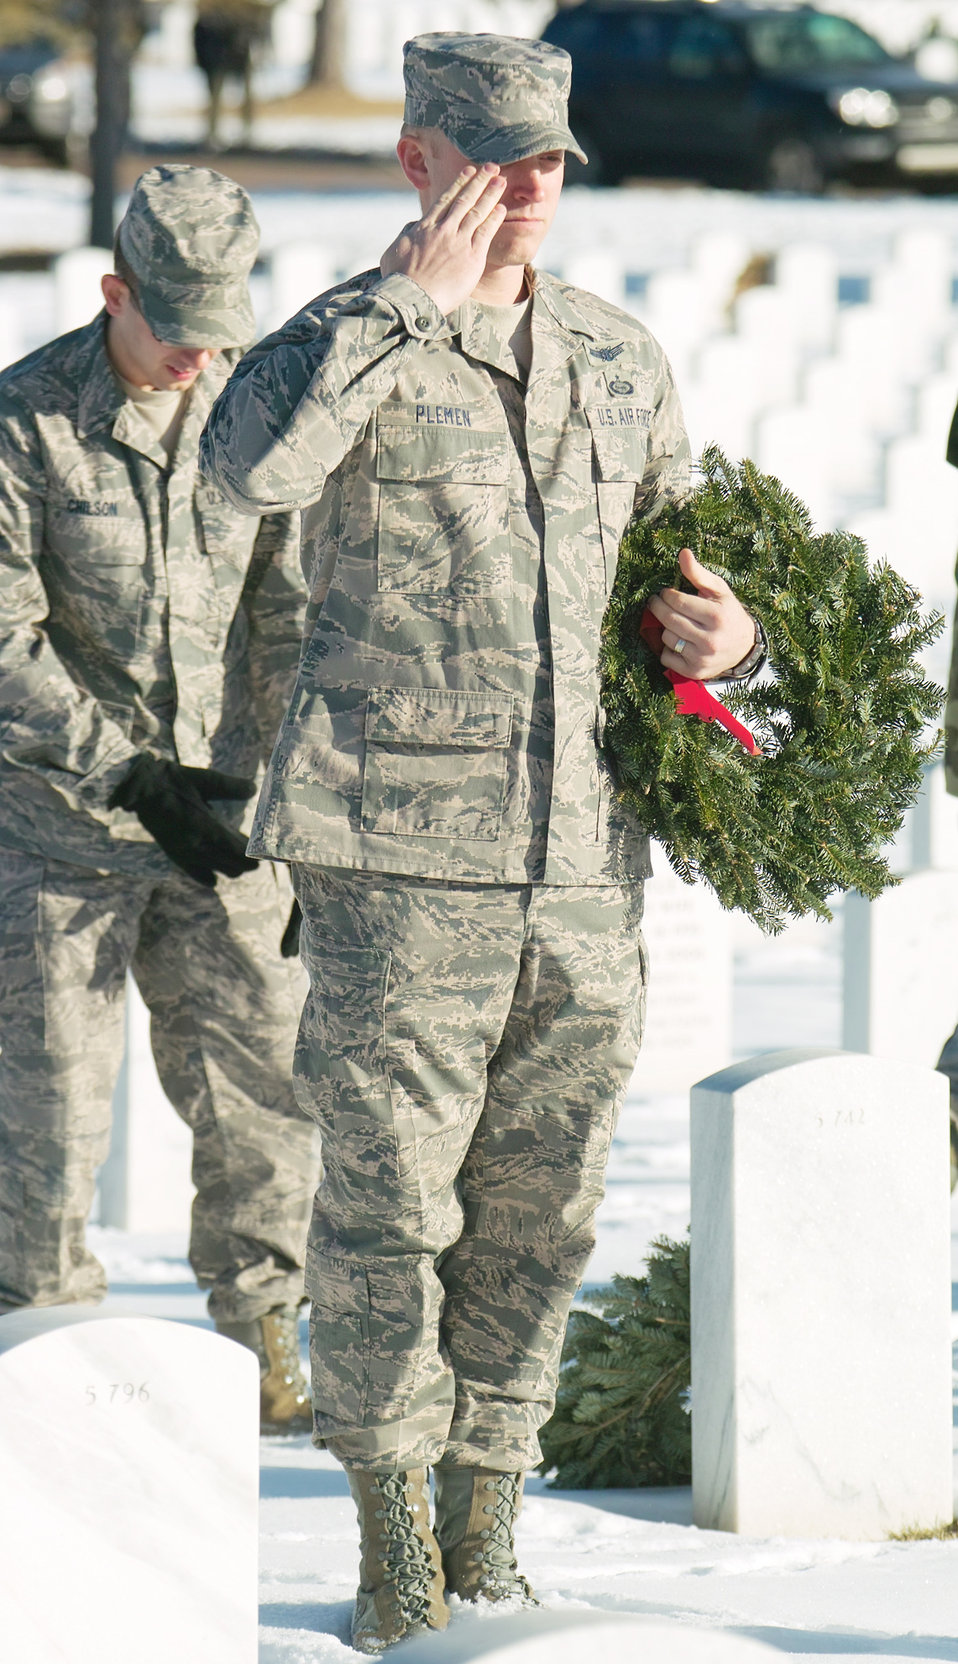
Volunteers honor veterans with wreaths

Tech. Sgt. David Plemen salutes after laying a wreath during Wreaths Across America Dec. 14, 2009, at Fort Logan National Cemetery in Littleton, Colo. He is with the 566th Intelligence Squadron.